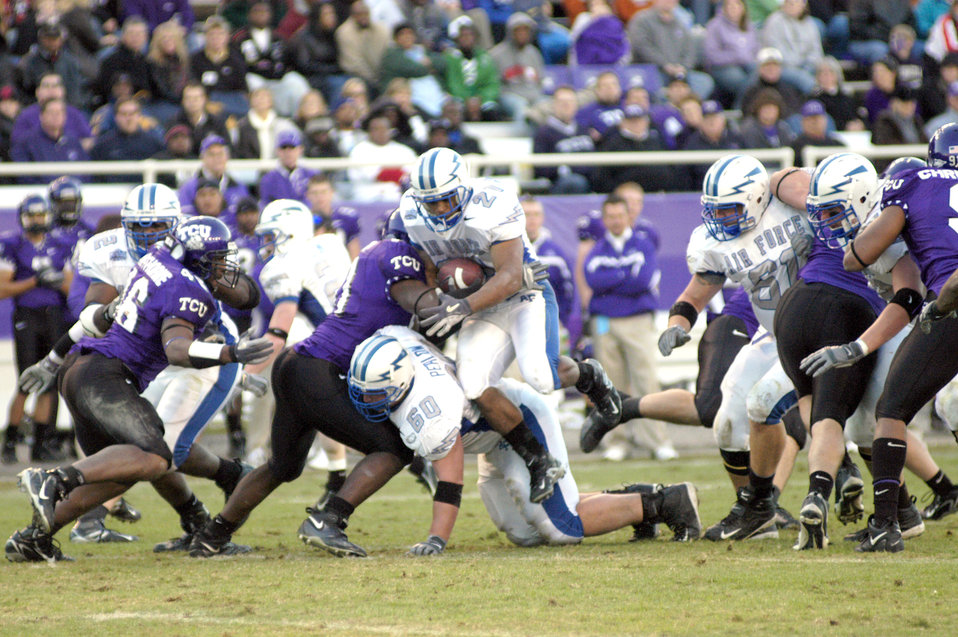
TCU grounds Air Force in season finale

Air Force fullback Ryan Williams follows the block of center Stuart Perlow up the middle for a gain in the Falcons regular season finale, a 38-14 loss to Texas Christian University Dec. 2 in Fort Worth.